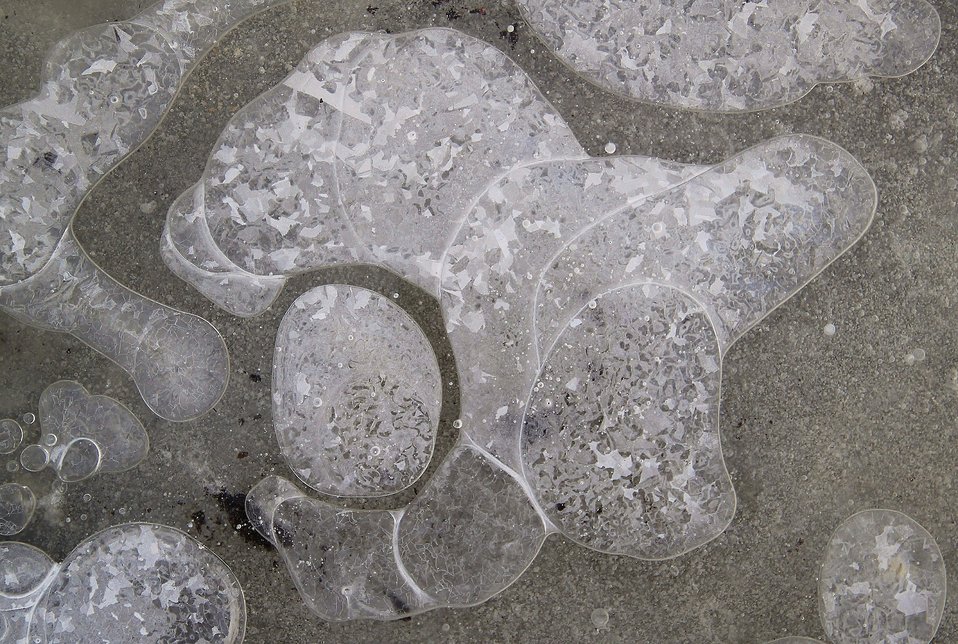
Crystals and ice

Missisquoi National Wildlife Refuge offers beauty even in the frozen depths of winter. Sometimes closer observation can be rewarding.